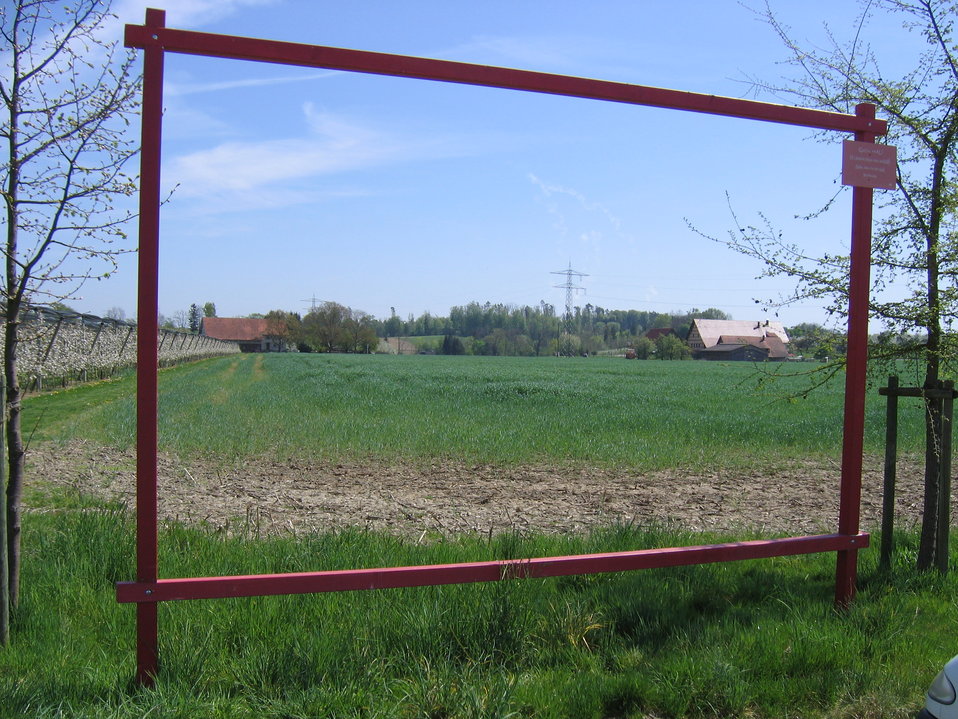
Deutsch: Deutschland - Baden-Württemberg - Bodenseekreis - Oberteuringen: Guck-mal-Rahmen bei Unterteuringen